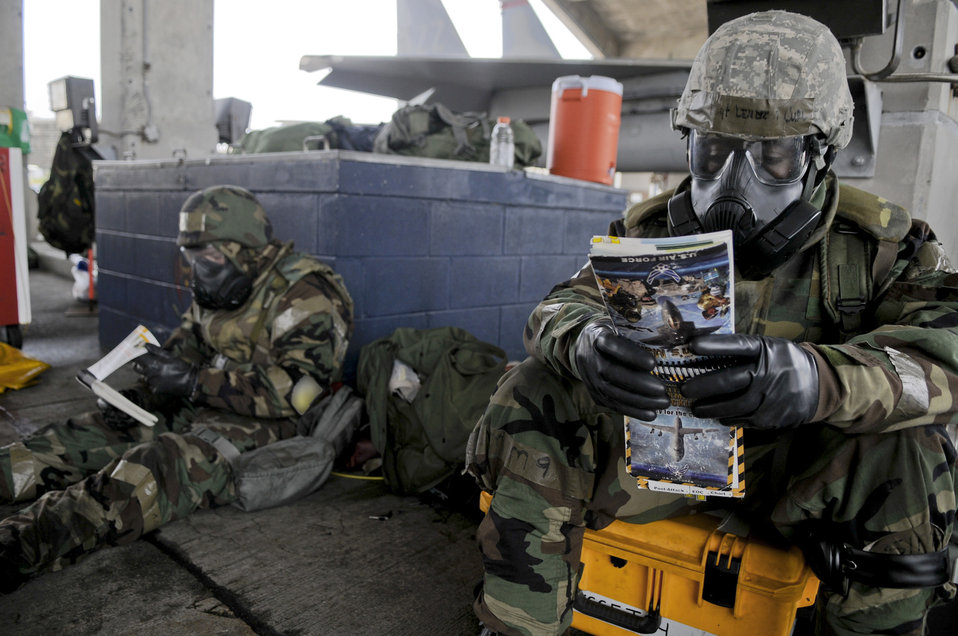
Local operational readiness exercise

Tech. Sgt. Lendrea Curl (right) and Airman 1st Class Kevin Buff consult their Airman’s Manuals during Beverly High, May 19, 2011, at Kadena Air Base, Japan. Sergeant Curl is assigned to the 18th Aircraft Maintenance Squadron. Airman Buff is assigned to the 67th Aircraft Maintenance Unit.